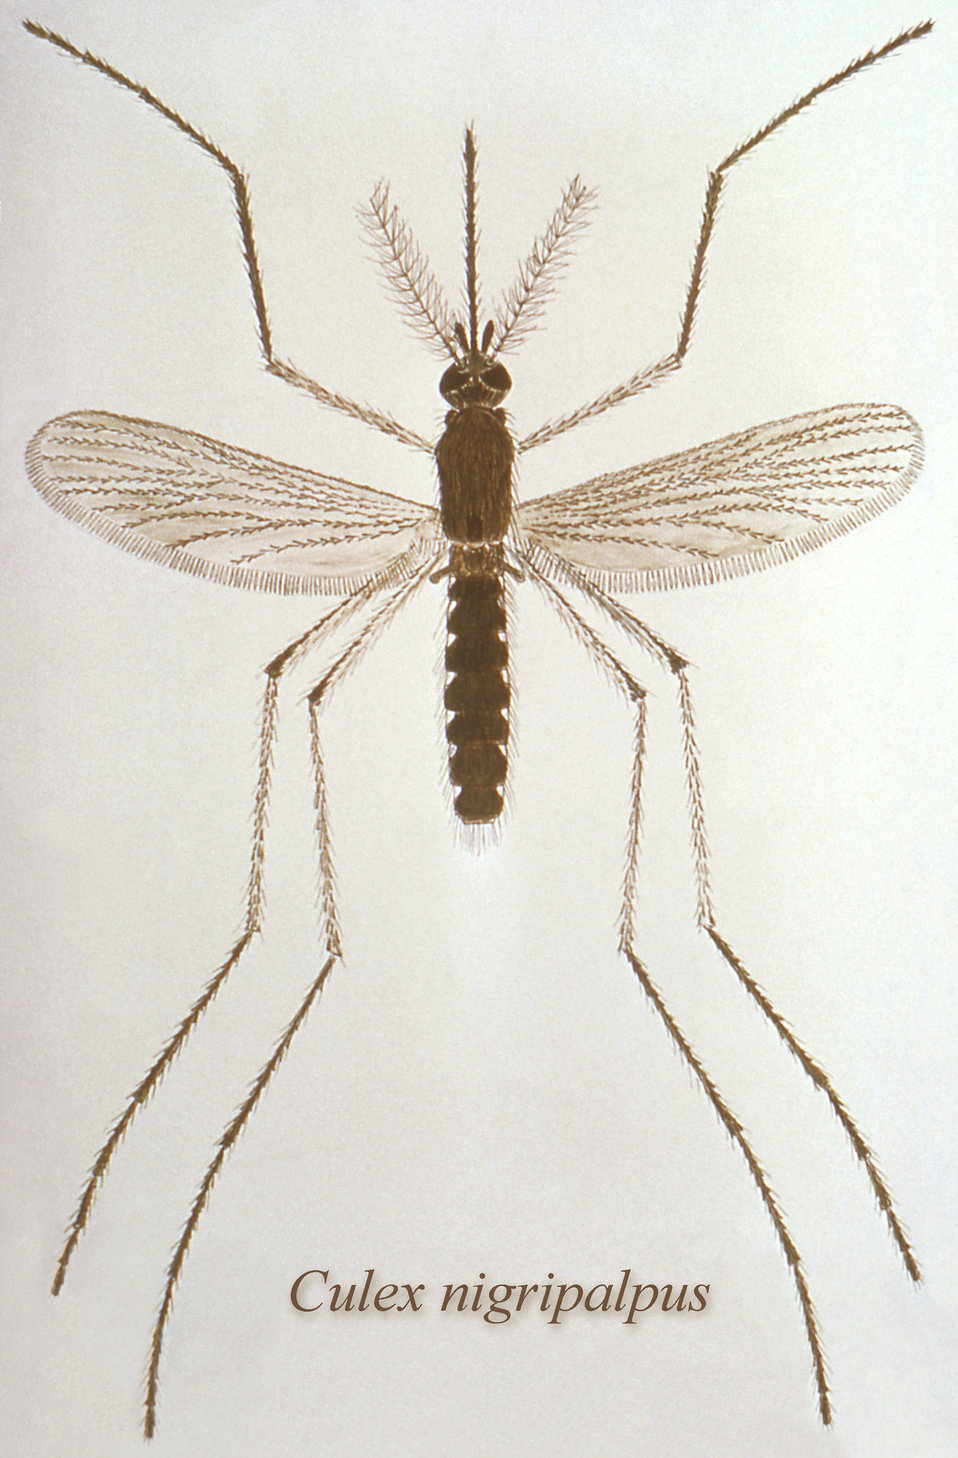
This illustration depicts a dorsal view of a Culex nigripalpus mosquito.